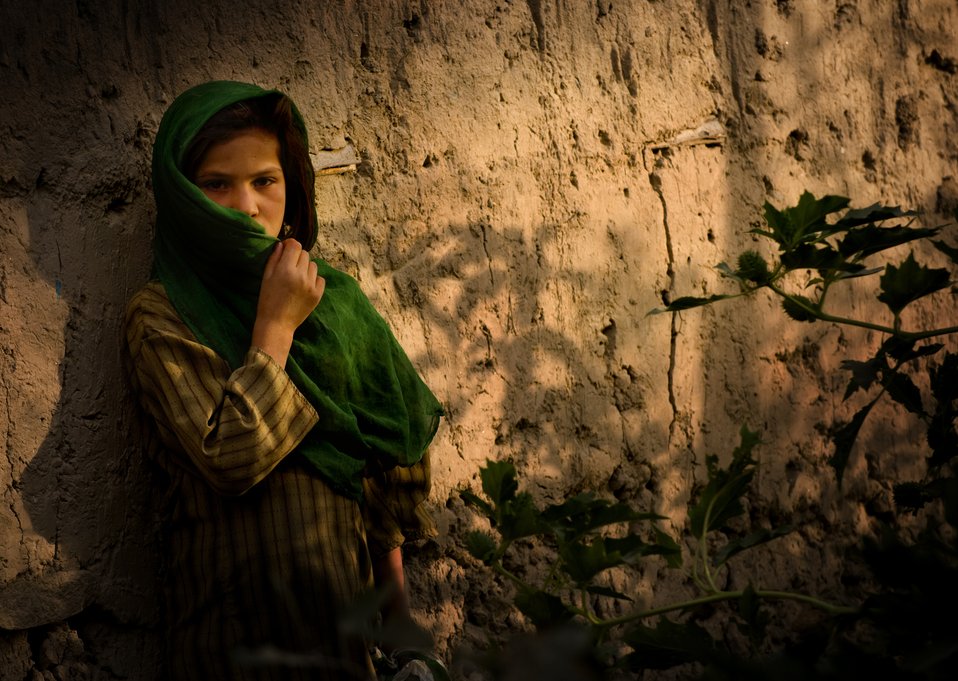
Village visit

An Afghan girl covers her face from the dusty wind recently in a village in Afghanistan. Curiosity drew the child out, but she remained shy of the foreigners who entered her village.